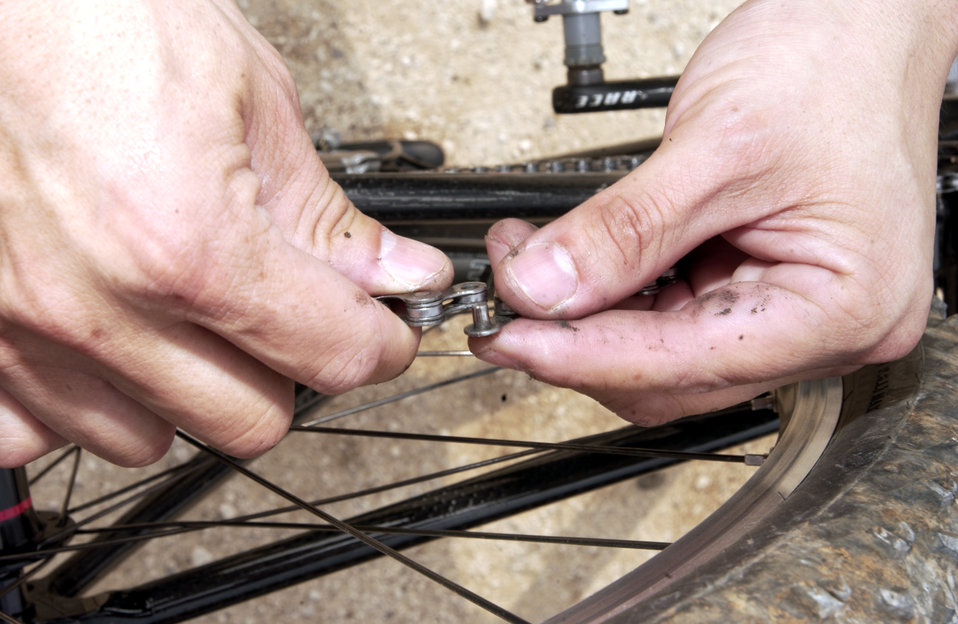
The missing link

AVIANO AIR BASE, Italy - Tech. Sgt. Reynaldo Santillan repairs a broken chain after the U.S. Air Forces in Europe mountain bike race April 3 at Campo Delta near here. Servicemembers stationed throughout Europe came here to take part in the first of 12 USAFE cycling events held during the year. Sergeant Santillan is a member of Det. 17 Operating Location B.